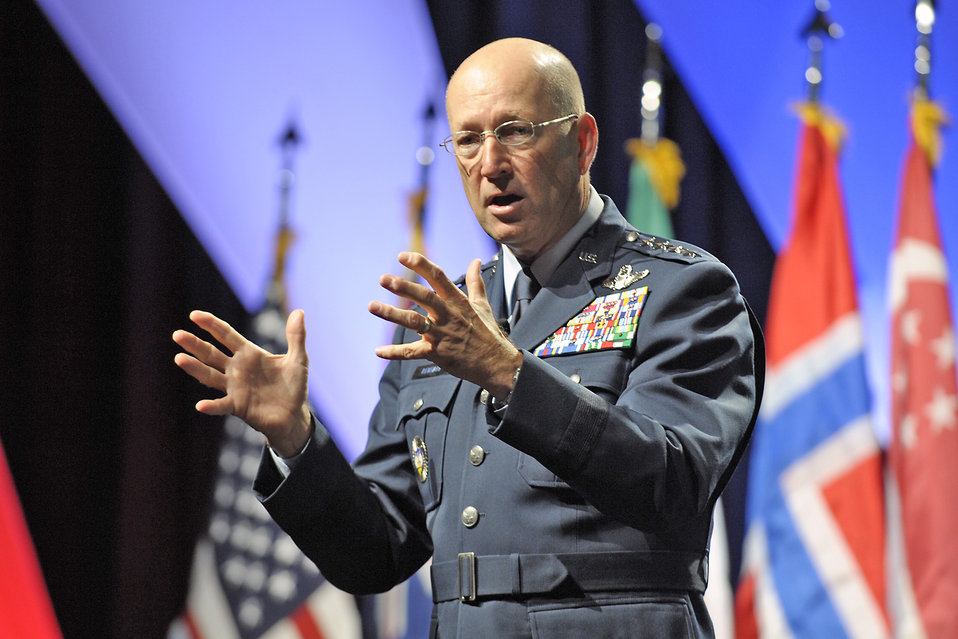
Guarding the nation's borders

Gen. Gene Renuart, commander of North American Aerospace Defense Command and U.S. Northern Command, speaks at the sixth annual Homeland Defense Symposium in Colorado Springs, Colo., Oct. 29. General Renuart discussed the homeland defense and homeland security missions of NORAD and USNORTHCOM and, specifically, how the commands fulfill those missions by collaborating with their civilian interagency partners.